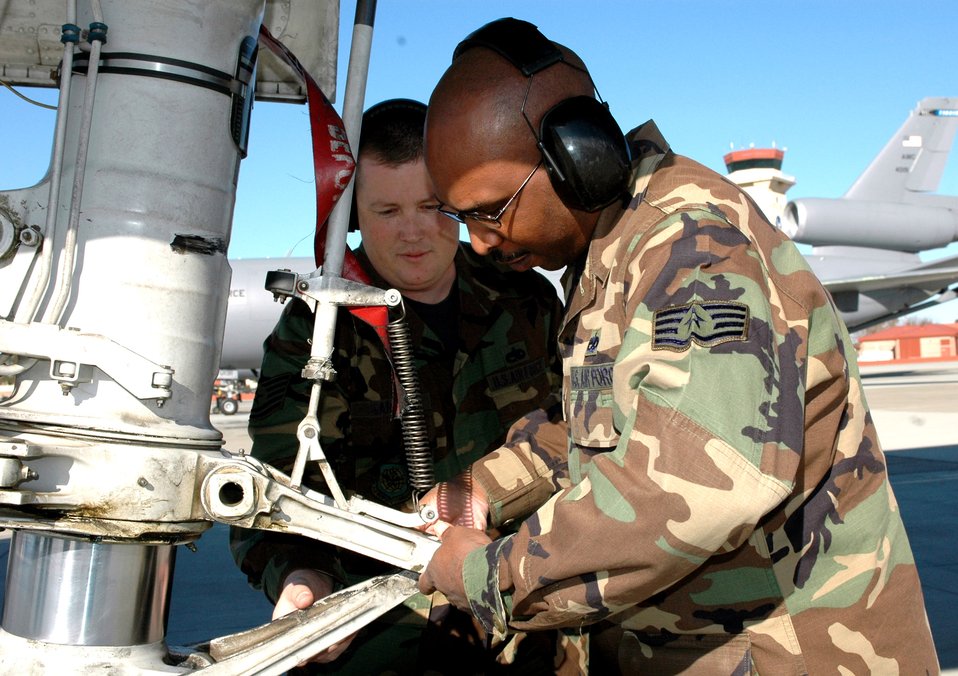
Travis trains PACAF crews to maintain KC-10s

Tech. Sgt. Kevin Harding (left) shows Staff Sgt. Andre Lee how a KC-10 Extender is towed using the nose landing gear Jan. 17 at Travis Air Force Base, Calif. Sergeant Harding is assigned to the 60th Maintenance Operations Squadron at Travis AFB, and Sergeant Lee is from the 735th Aircraft Maintenance Squadron, Hickam Air Force Base, Hawaii. Sergeant Lee is part of the 60th MOS two-phase, training program designed to help streamline KC-10 maintenance.